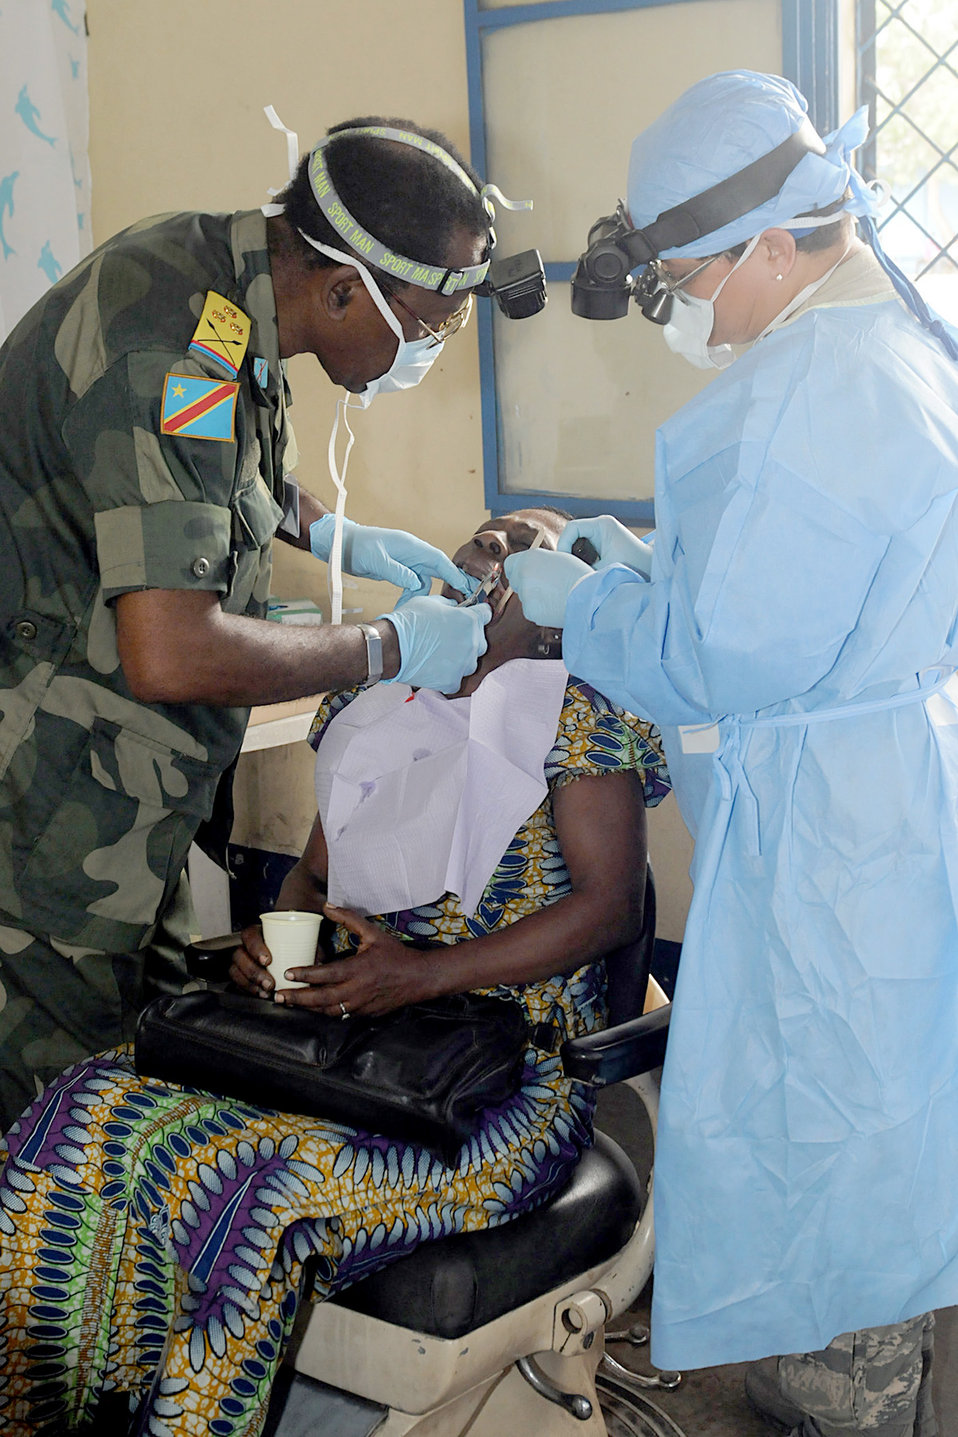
Air Force dentists bring relief to the Congo

Lt. Col. (Dr.) Jacqueline Garcia-Castellanos works side by side with a Armed Forces of the Democratic Republic of Congo dentist Sept. 14, 2010, in Kinshasa, Democratic Republic of Congo. Colonel Castellanos is a reservist with the 482nd Aeromedical Dental Squadron at Homestead Air Reserve Base, Fla. She is part of MEDFLAG 10, a joint medical exercise aimed at providing humanitarian assistance to the local people.